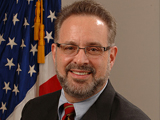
Ron Valdiserri 1